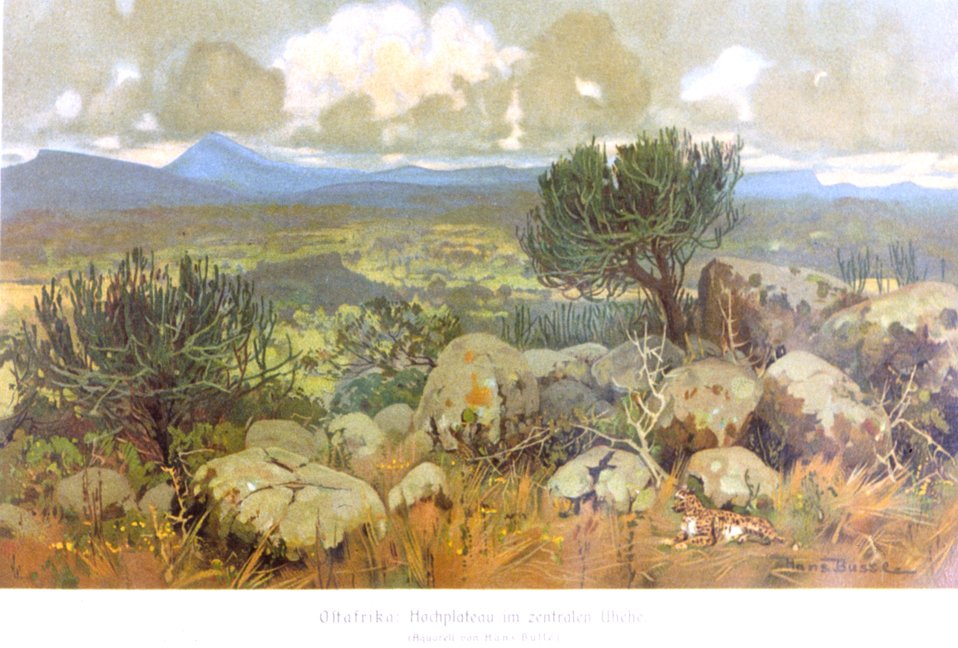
High plateau area within German East Africa colonies. In: 'Das Deutsche Kolonialreich,' by Hans Meyer, 1909. Vol I, p. 184. Library Call Number: Cfd M612 d